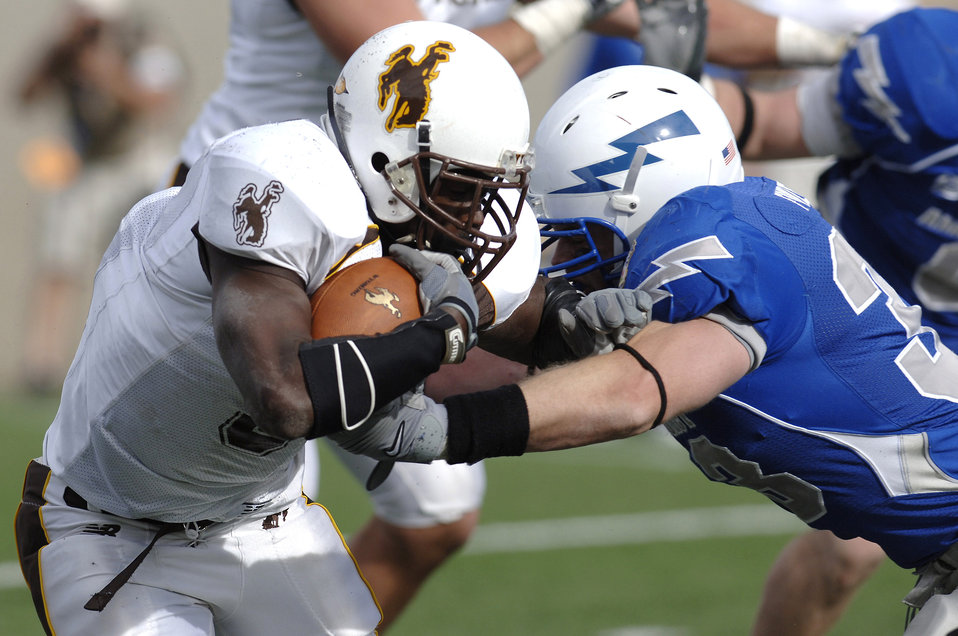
Football: Falcons bowl-eligible after win over Wyoming

U.S. Air Force Academy Falcons linebacker Drew Fowler goes one-on-one with Wyoming running back Wynel Seldon during Air Force's 20-12 win Oct. 20 at Falcon Stadium in Colorado. Fowler had 12 tackles in the game, his 12th career game in double figure tackles.